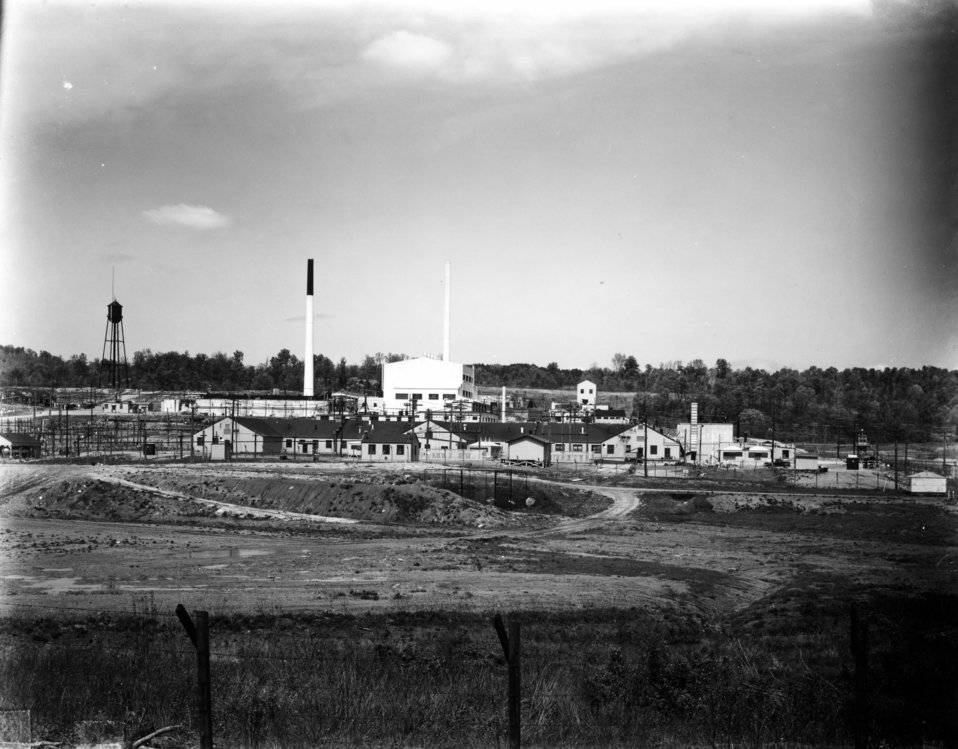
X-10 at Oak Ridge